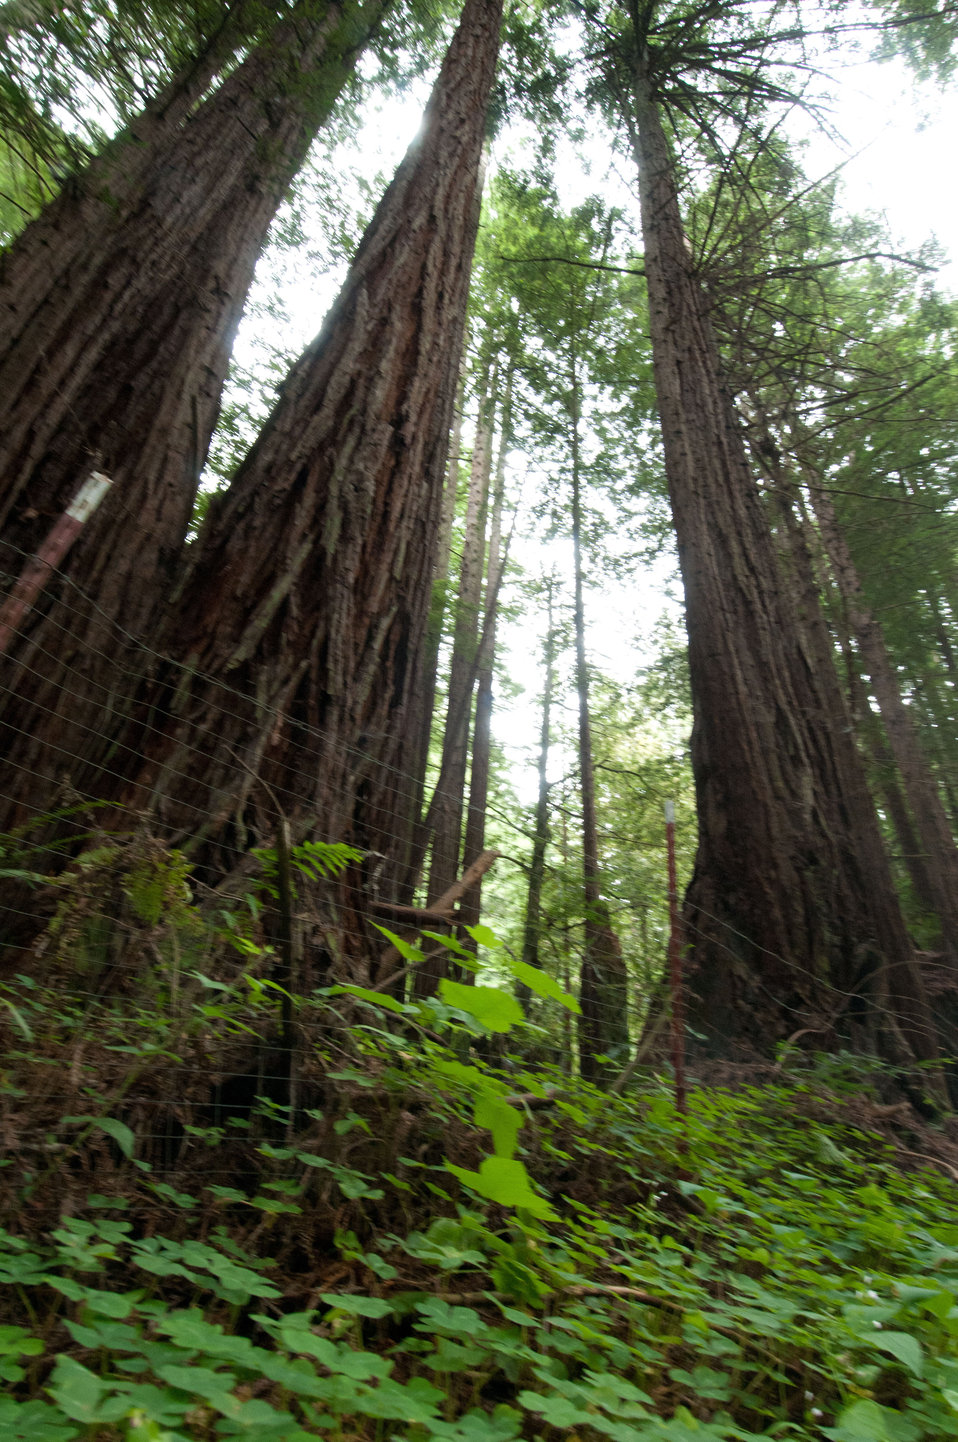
Cathedral growth redwood trees in a private forest in Santa Cruz County, CA, on Friday, June 17, 2011. Cathedral trees are a group of redwoods that grow in a circle around a host stump or tree, from which they sprouted. Assisting landowners when they want help in the management of their private forest is a factor in the America’s Great Outdoors Initiative (AGO).